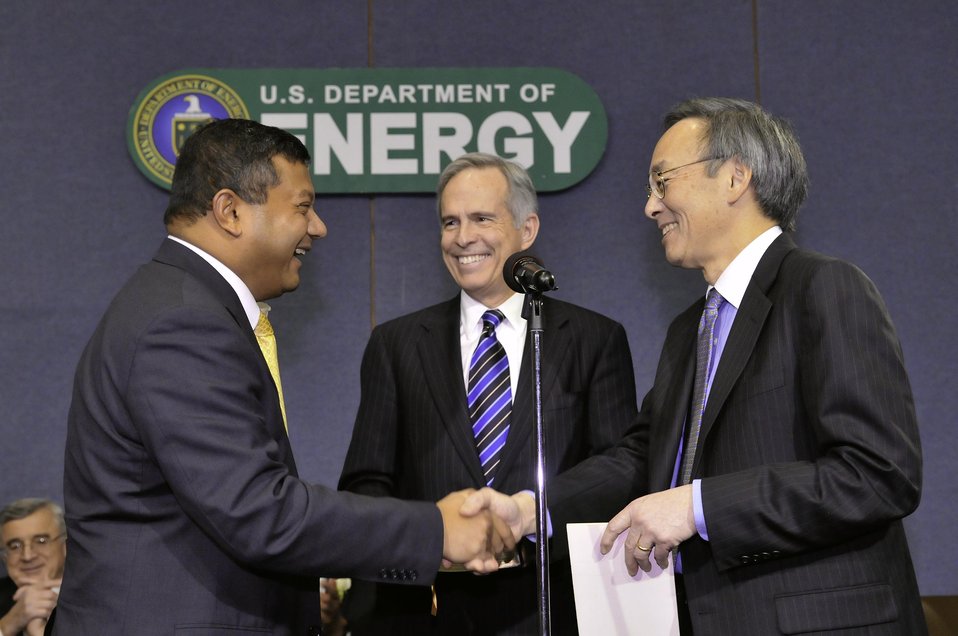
DDFC5~1